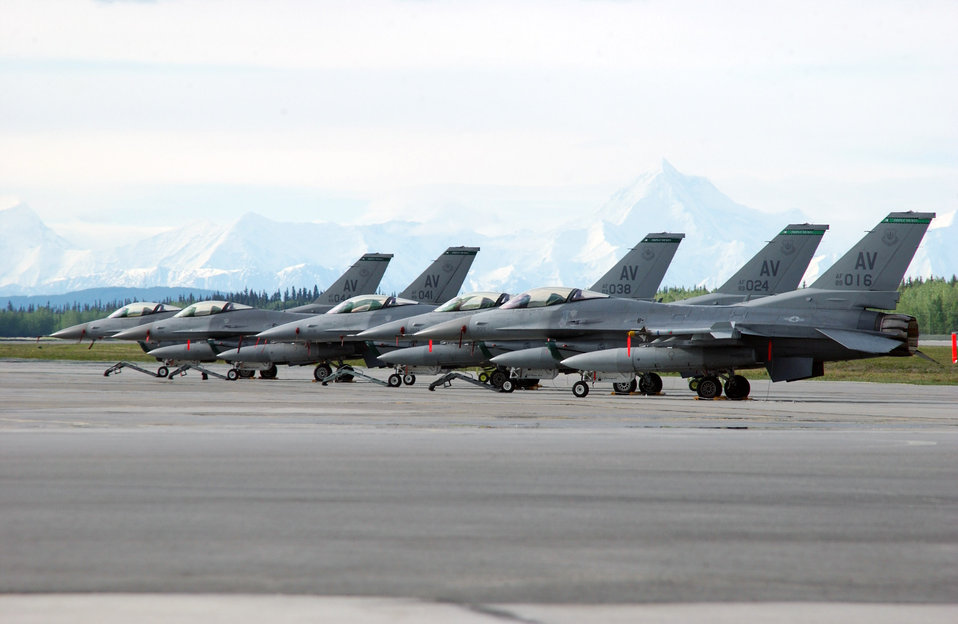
Joint forces combine for Red Flag-Alaska exercise

F-16 Fighting Falcons from Aviano Air Base, Italy, sit on the tarmac at Eielson Air Force Base, Alaska, May 31 for Red Flag-Alaska 07-2. The Pacific Air Forces-directed field training exercise allows U.S. and coalition forces to fly under simulated air combat conditions. It is conducted on the Pacific Alaska Range Complex with air operations flown out of Eielson and Elmendorf AFB. The aircraft are from the 555th Fighter Squadron.